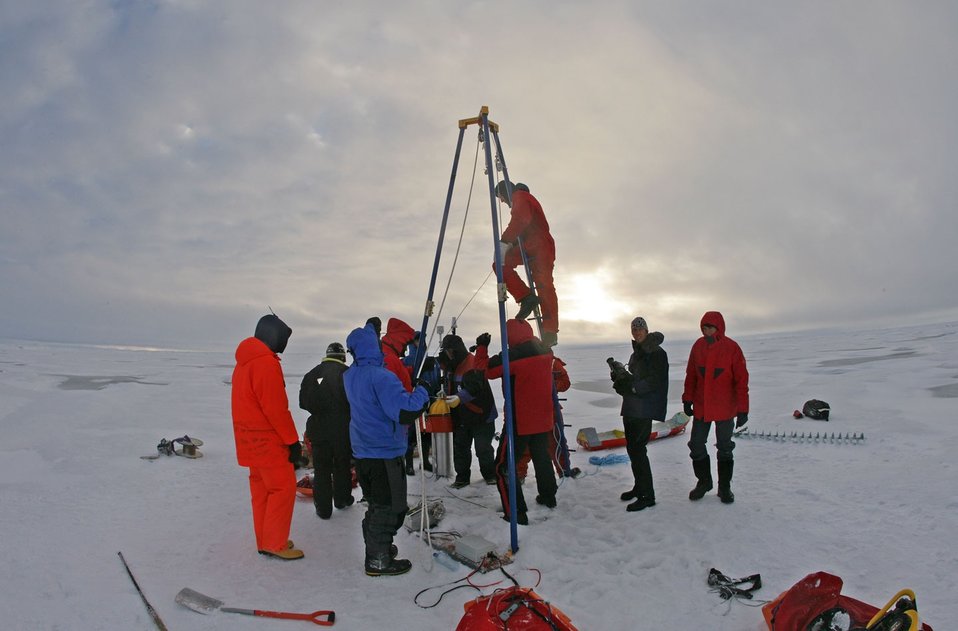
Science team deploying DAMOCLES (Developing Arctic Modeling and Observing Capabilities for Long-term Environmental Studies) system through ice.